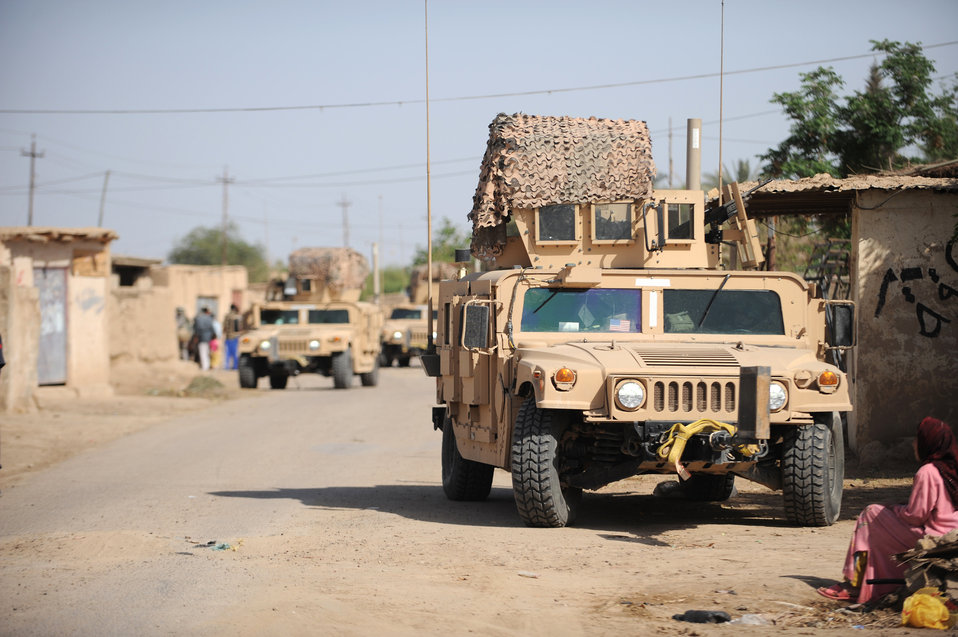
Joint Base Balad security forces Airmen patrol Iraq villages

A Humvee patrol from the 532nd Expeditionary Security Forces Squadron at Joint Base Balad, Iraq, conduct security April 9 during a patrol in the village of Abo Atei.